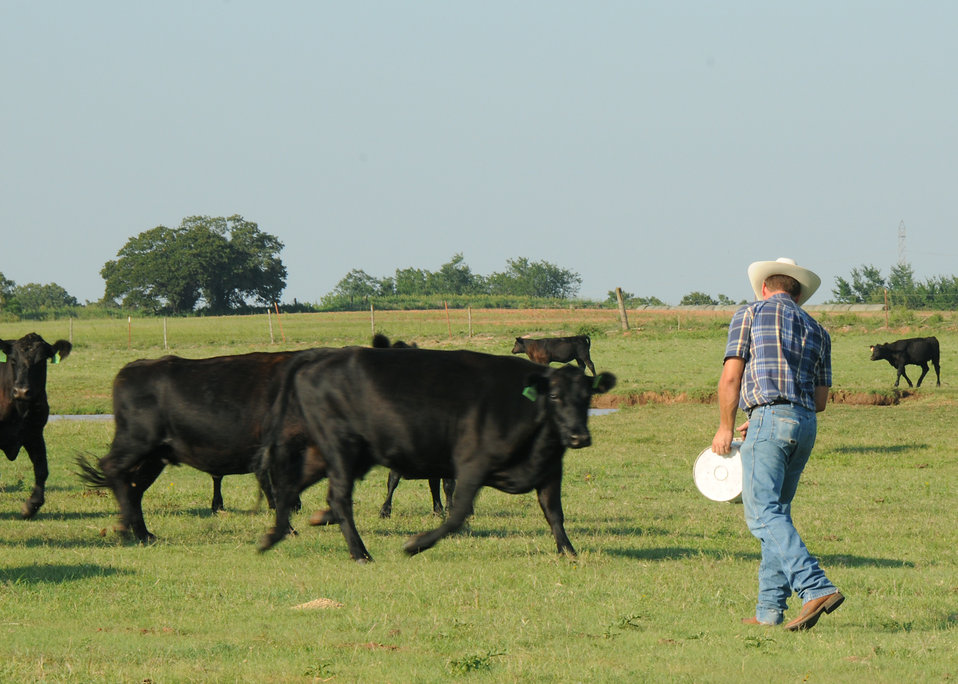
Steve Burris feeds the Angus cattle he purchased with the American Recovery and Reinvestment (ARRA) funds.